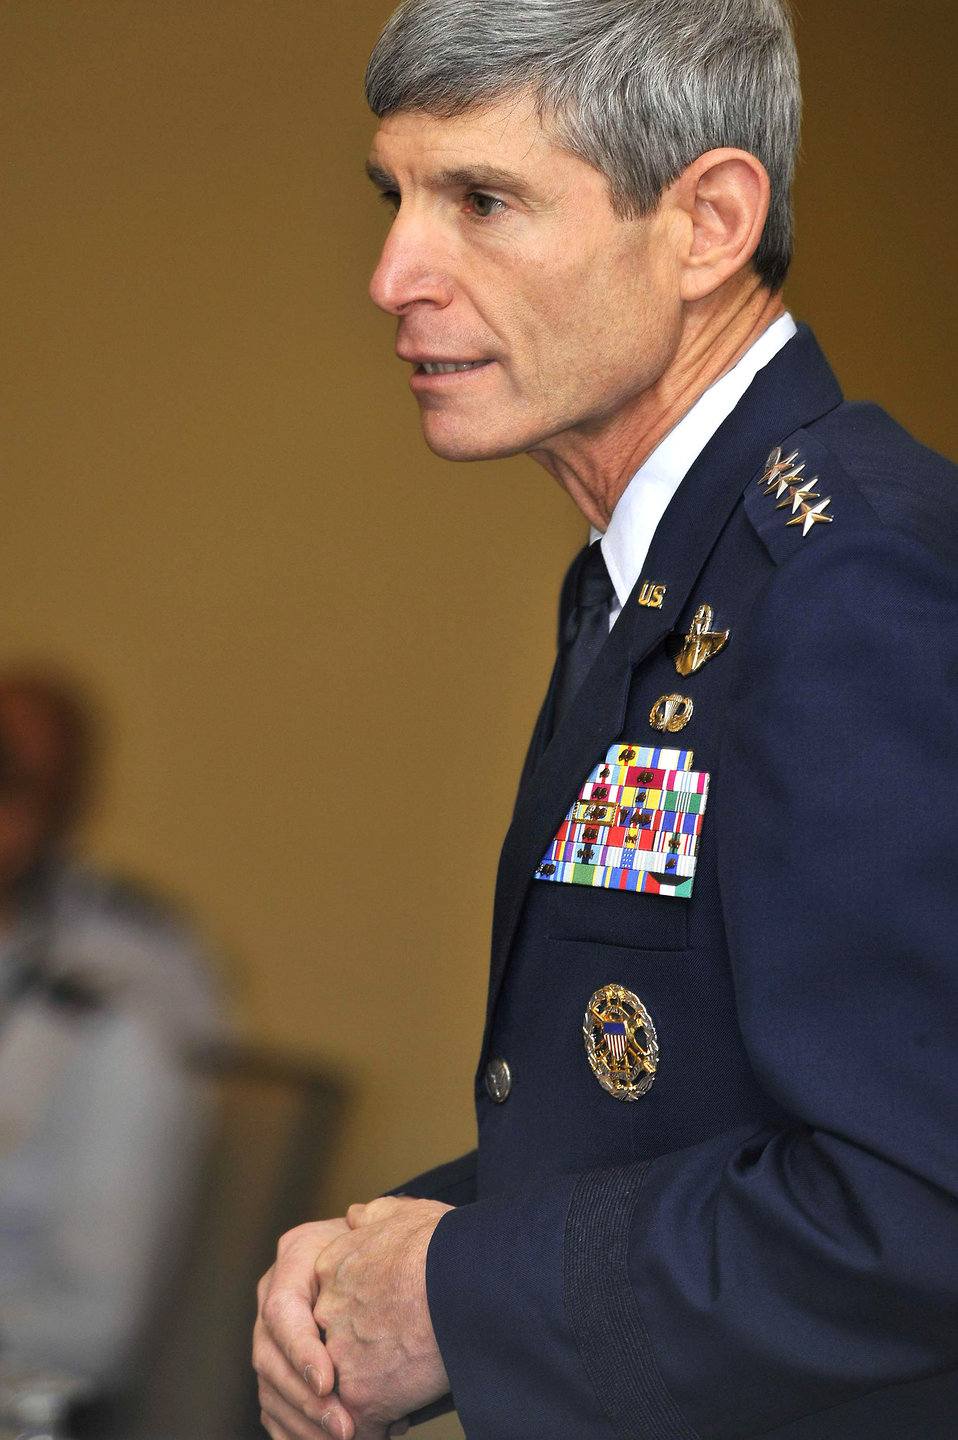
Air Force leaders reinforce zero tolerance for sexual assault

Air Force Chief of Staff Gen. Norton Schwartz speaks at the Sexual Assault Prevention and Response Leader Summit held Nov. 17 and 18 in Alexandria, Va. The chief and Secretary of the Air Force Michael B. Donley challenged attendees-including Air Force leaders from major commands and wings throughout the Air Force-to make a commitment to eliminating sexual assault in the Air Force.